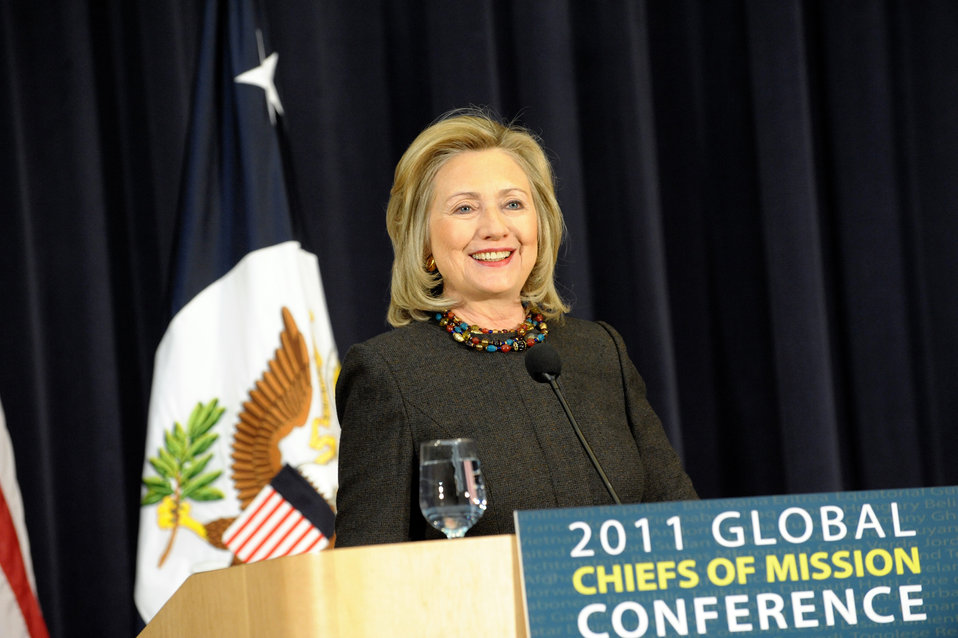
Secretary Clinton Delivers Remarks at First-Ever Global Chiefs of Mission Conference

U.S. Secretary of State Hillary Rodham Clinton delivers remarks at the first-ever Global Chiefs of Mission Conference at the U.S. Department of State in Washington, D.C., on February 2, 2011.